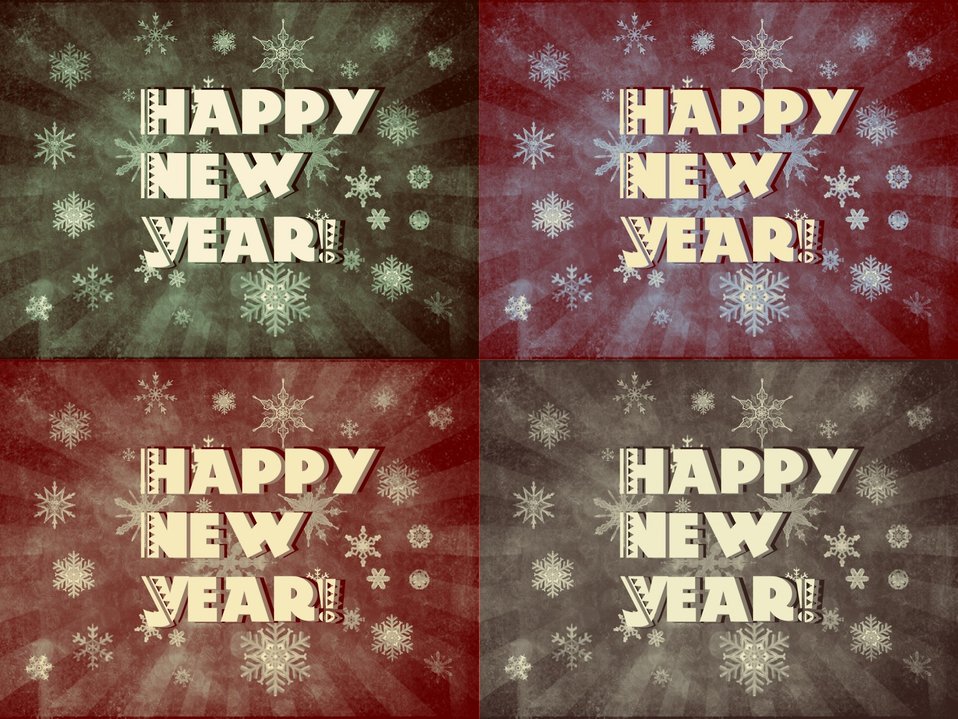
Happy new year!

Digital computer graphic - postcard.